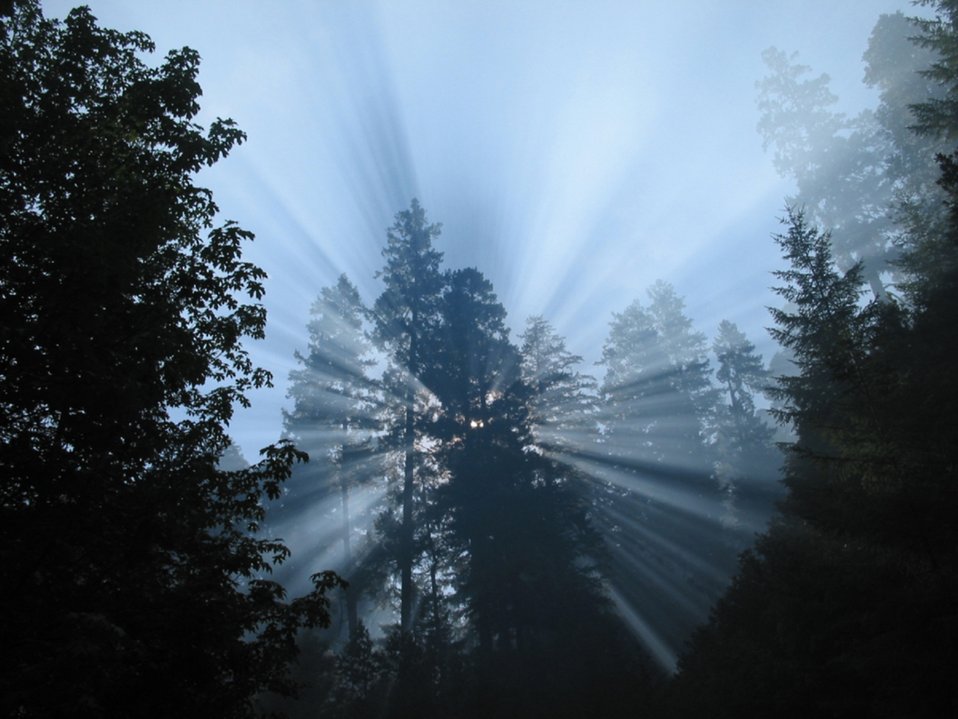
Early morning sun through fire smoke. Douglas County. Gregg Morgan, Roseburg Art 1